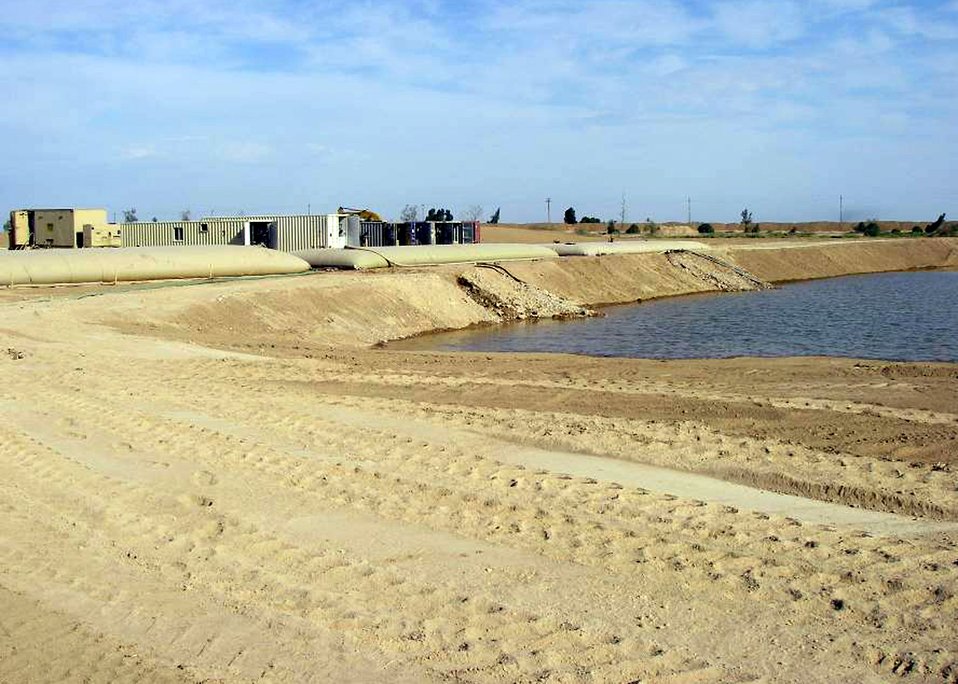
RED HORSE helps build combat brigade base in 45 days

Soldiers from the 92nd Engineer Battalion completed a 6-million-gallon raw water processing plant at Forward Operating Base Hammer, Iraq. The 557th Expeditionary RED HORSE Airmen and Soldiers from the 92nd Engineer Battalion's